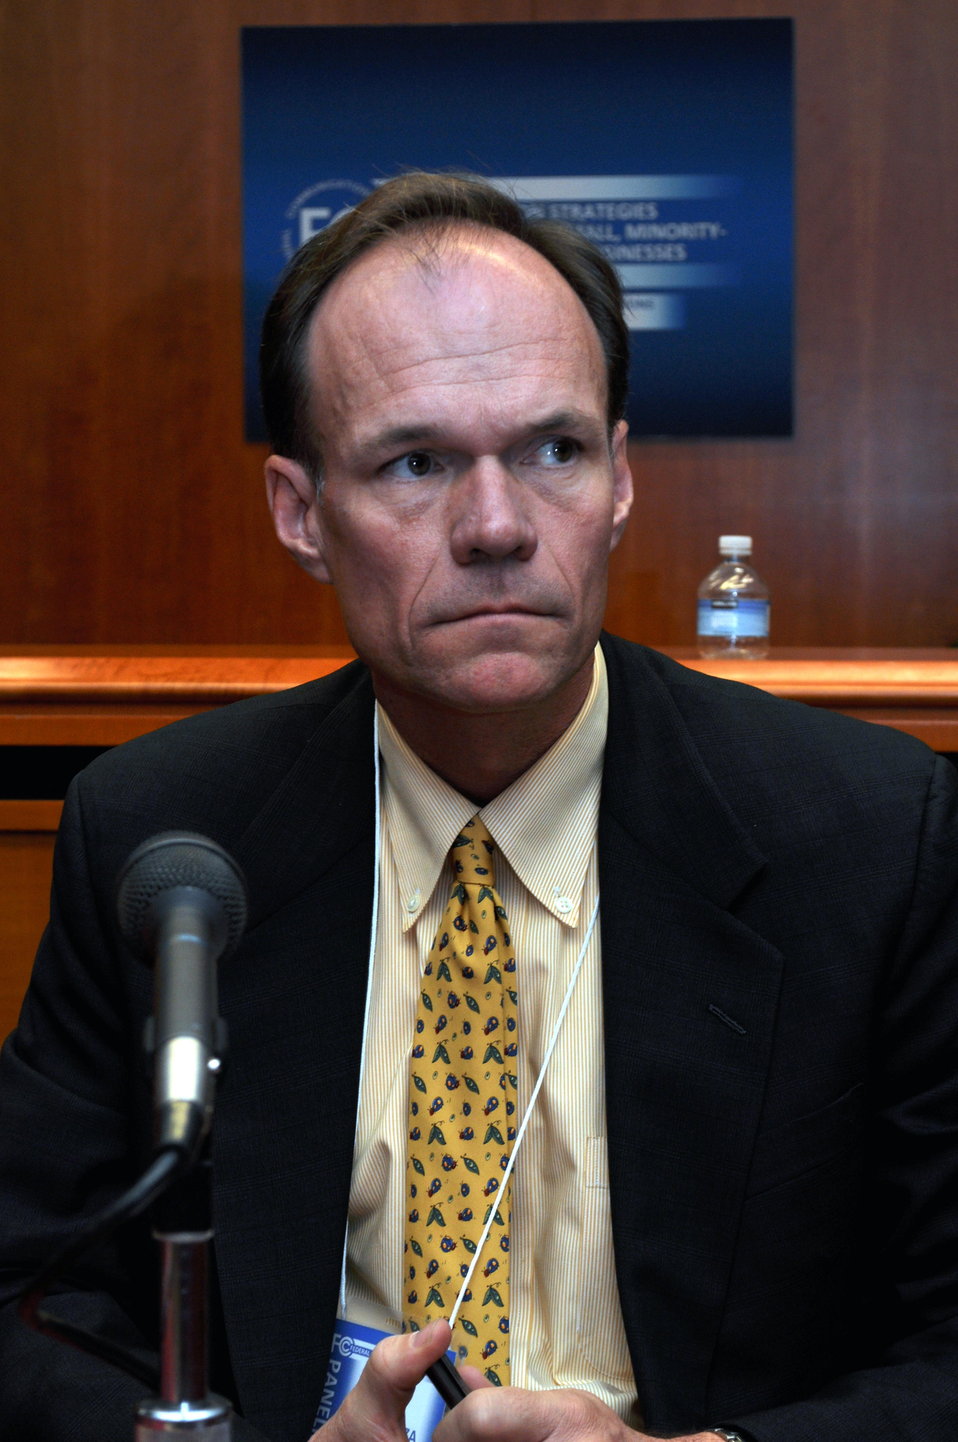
Capitalization Strategies

Workshop for small, minority and women owned businesses. Hosted by the Office of Communications Business Opportunities